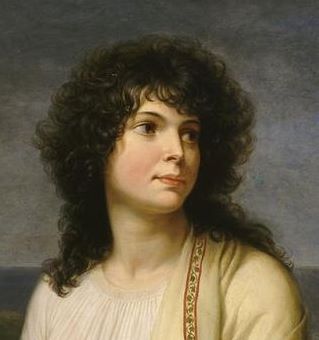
Fortunee-Hamelin-detail